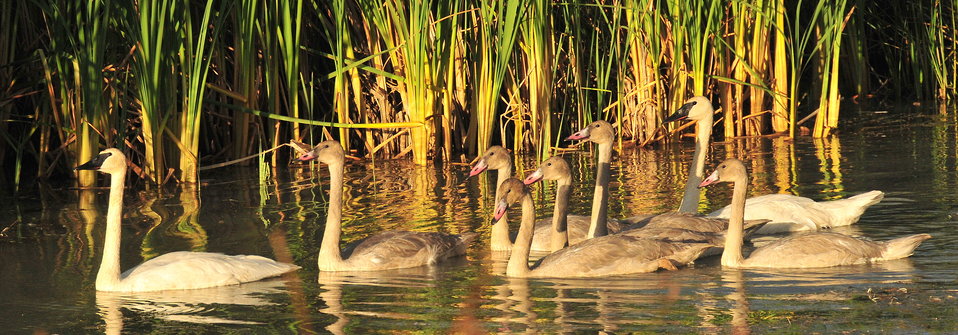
Trumpeter Swan pair and Cygnets on Seedskadee NWR 02

Seedskadee NWR has been part of the range expansion program for trumpeter swans in Wyoming for over 2 decades. Up to 7 pairs now successfully nest each year. The highly productive wetlands on Seedskadee NWR produce almost half of the swans that fledge in Wyoming each year.